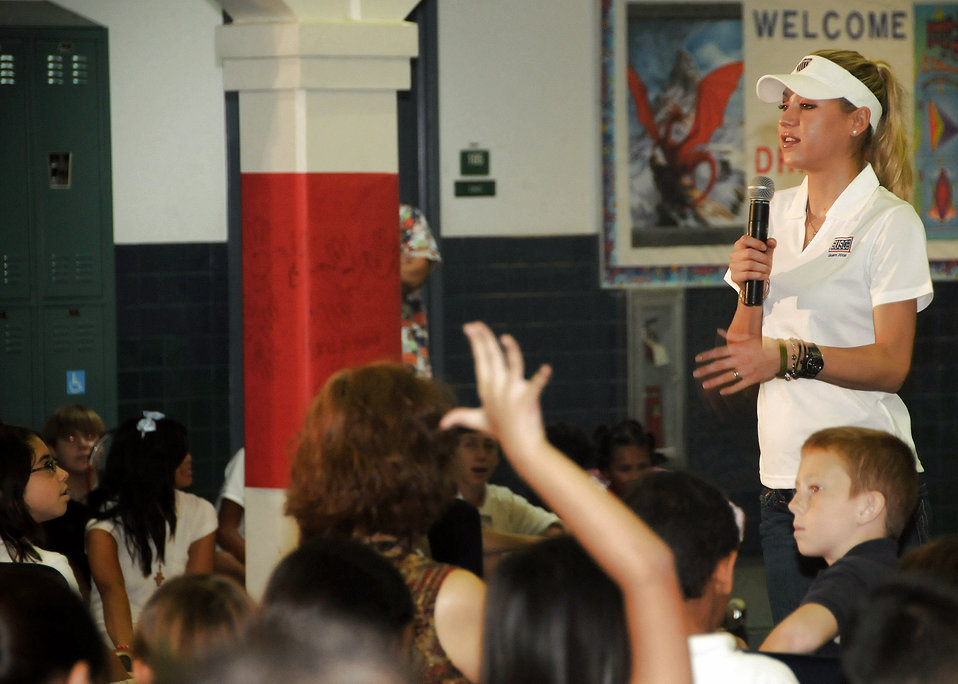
Anna Kournikova visits Andersen

Anna Kournikova answers questions from Andersen Middle School students Oct. 29 at Andersen Air Force Base, Guam. Her tour was sponsored by the USO to boost morale of servicemembers on Guam.